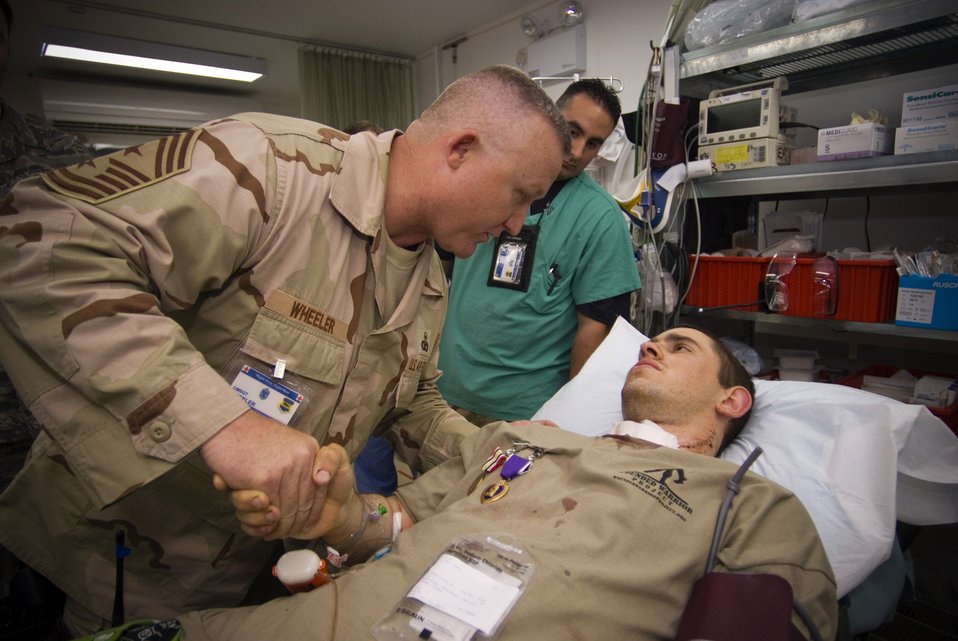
Airman survives 'million-dollar' wound

Airman 1st Class Michael Brady is thanked for his service by Chief Master Sgt. Paul Wheeler, the 332nd Air Expeditionary Wing command chief, Oct. 14 at the Air Force Theater Hospital at Balad Air Base, Iraq. Airman Brady was augmenting the Army in a non-traditional